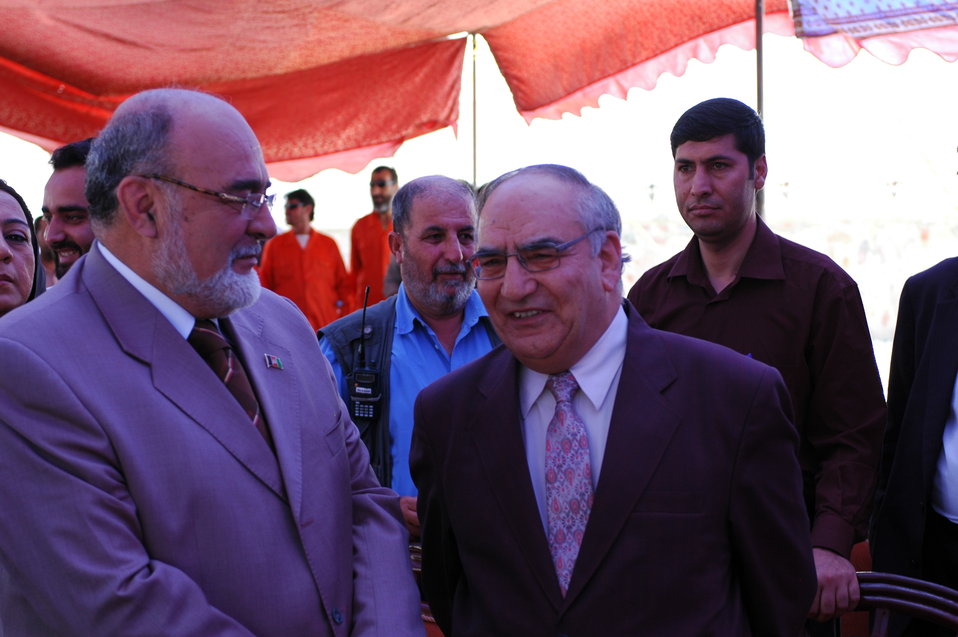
105 MW Tarakhil Power Plant Handover